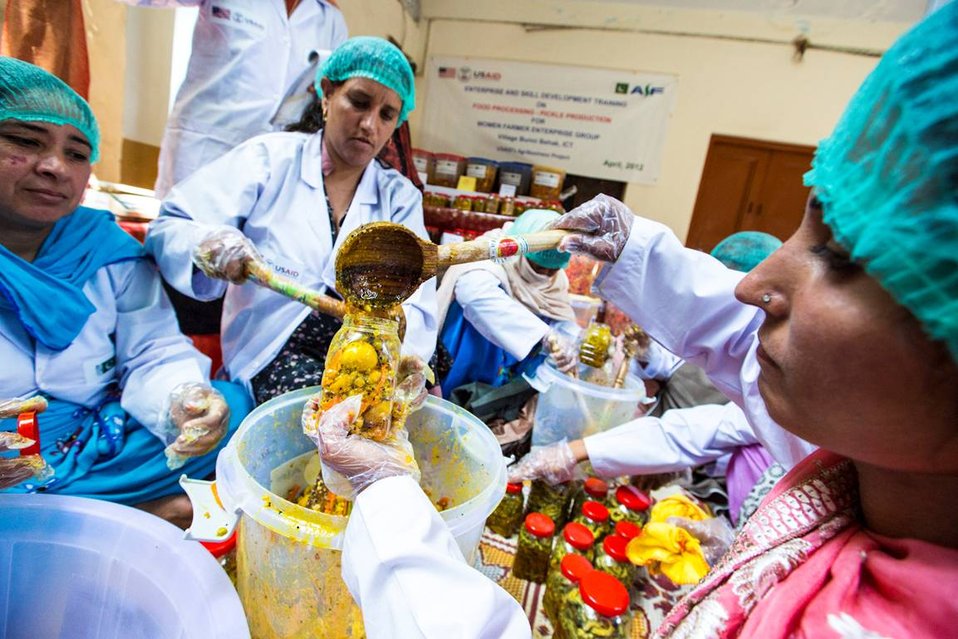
USAID's Agribusiness Project Women FEG for Food Processing - Pickle Production at Village Jabbi

www.usaid.gov/pk/db/sectors/growth/project 750.html